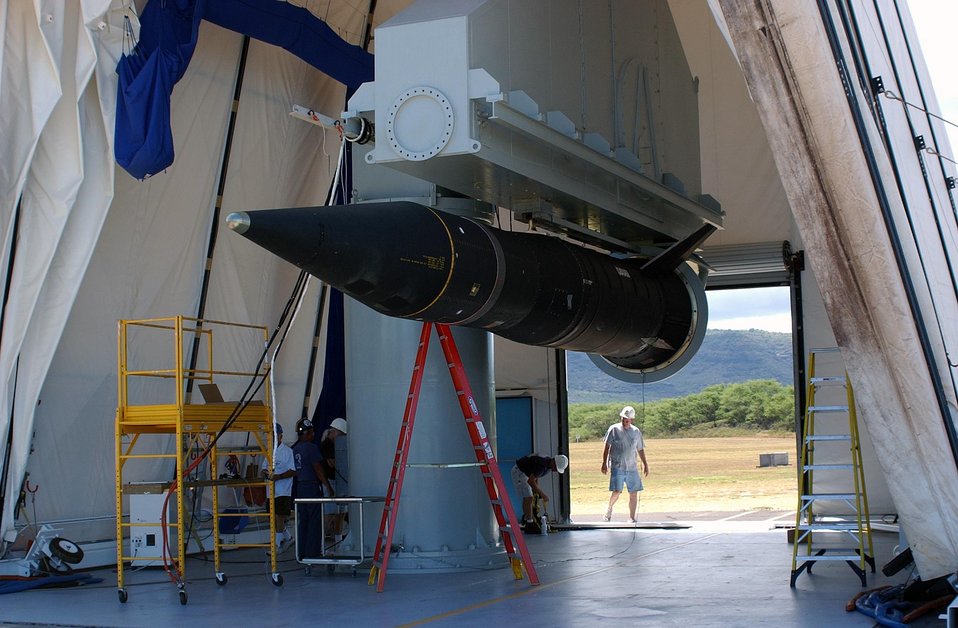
THE FM-5 TARGET ROCKET LOADED ONTO ITS RAIL LAUNCHER.

FM-5 IS A MISSILE DEFENSE ROCKET BEING PREPARED FOR LAUNCH. SANDIA'S KAUAI TEST FACILITY, OPERATED FOR DOE, IS ON THE U.S. NAVY'S PACIFIC MISSILE RANGE FACILITY ON THE ISLAND OF KAUAI, HAWAII. SINCE 1962 SANDIA HAS SENT SCIENTISTS AND TECHNICIANS TO CONDUCT ROCKET FLIGHT TEST EXPERIMENTS RANGING FROM OFFENSIVE AND DEFENSIVE WEAPONS TESTING TO ATMOSPHERIC STUDIES AND HIGH TECH STAR GAZING.